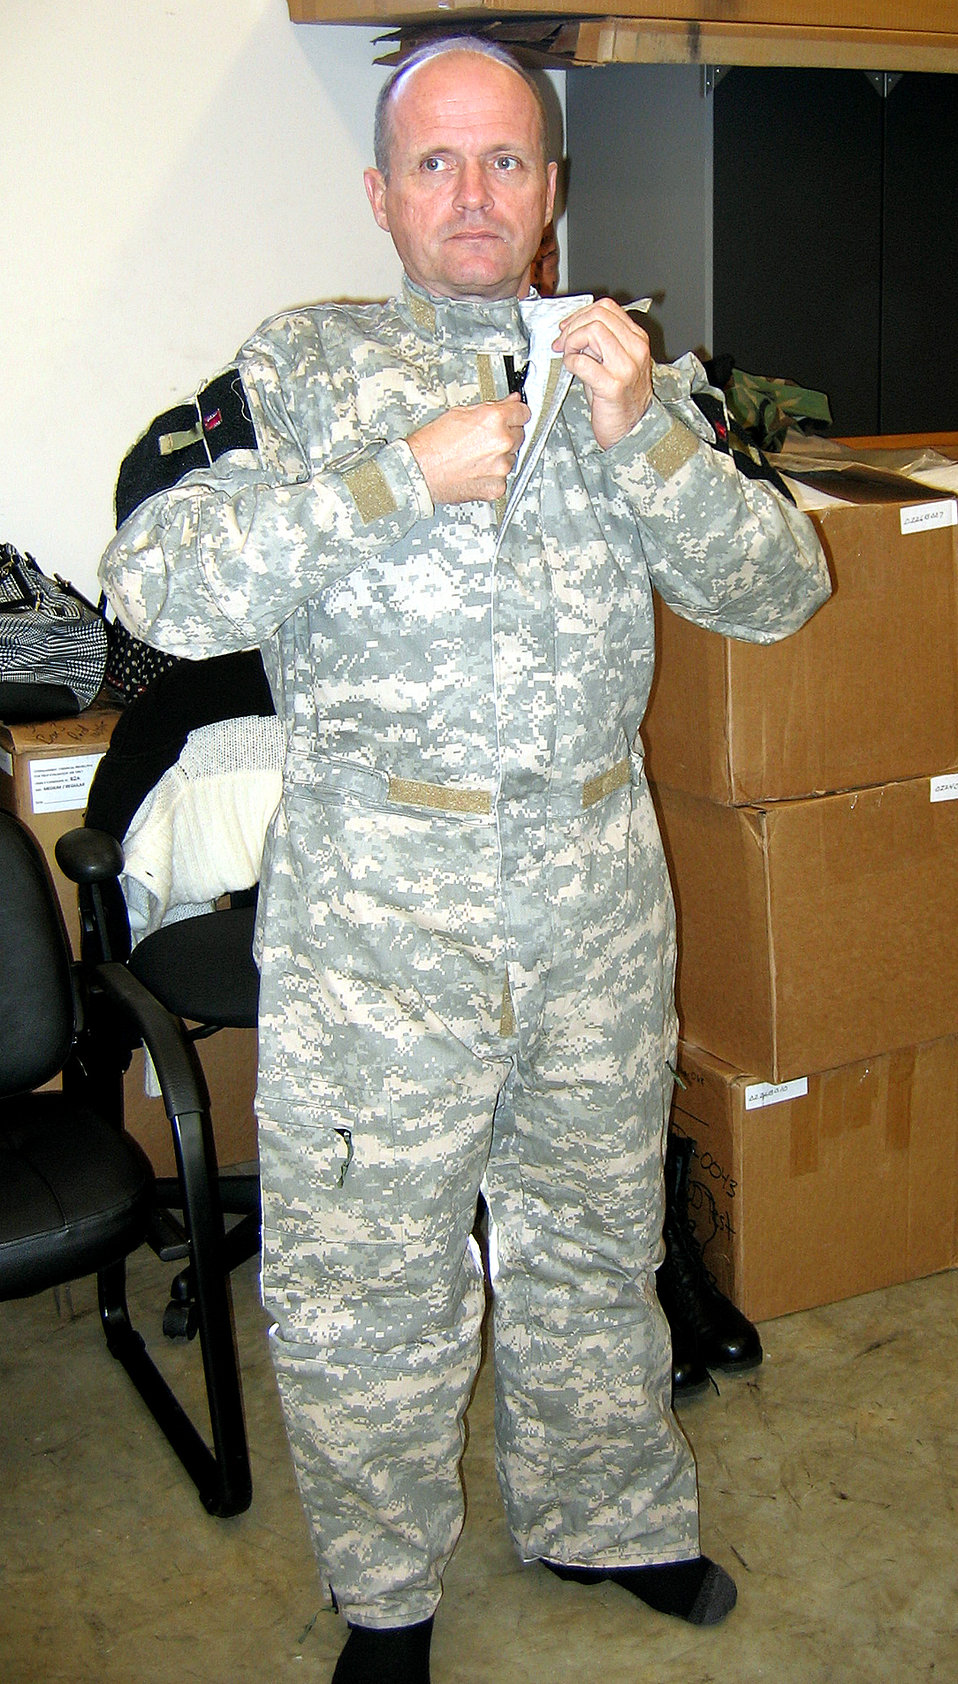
Airmen test new chemical warfare suit

MOODY AIR FORCE BASE, Ga. -- Col. John Decknick tries on the new chemical warfare suit. The 820th Security Forces Group commander tried on the suit Oct. 24. The 820th SFG is the first military unit to perform tests on several components of the new chemical warfare suit.